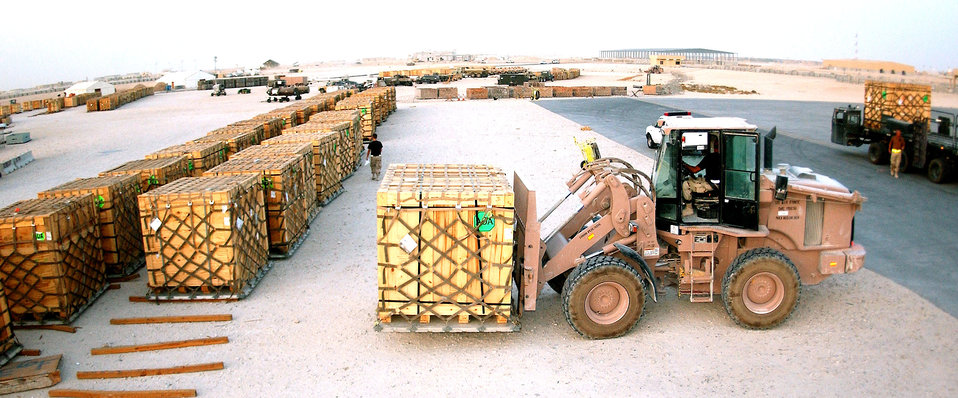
Airmen support Soldiers, Marines with up-armor kits

SOUTHWEST ASIA -- Airmen of the 8th Expeditionary Air Mobility Squadron at a forward-deployed location load pallets of up-armor kits July 19. The pallets will be flown to forward-deployed Soldiers and Marines.